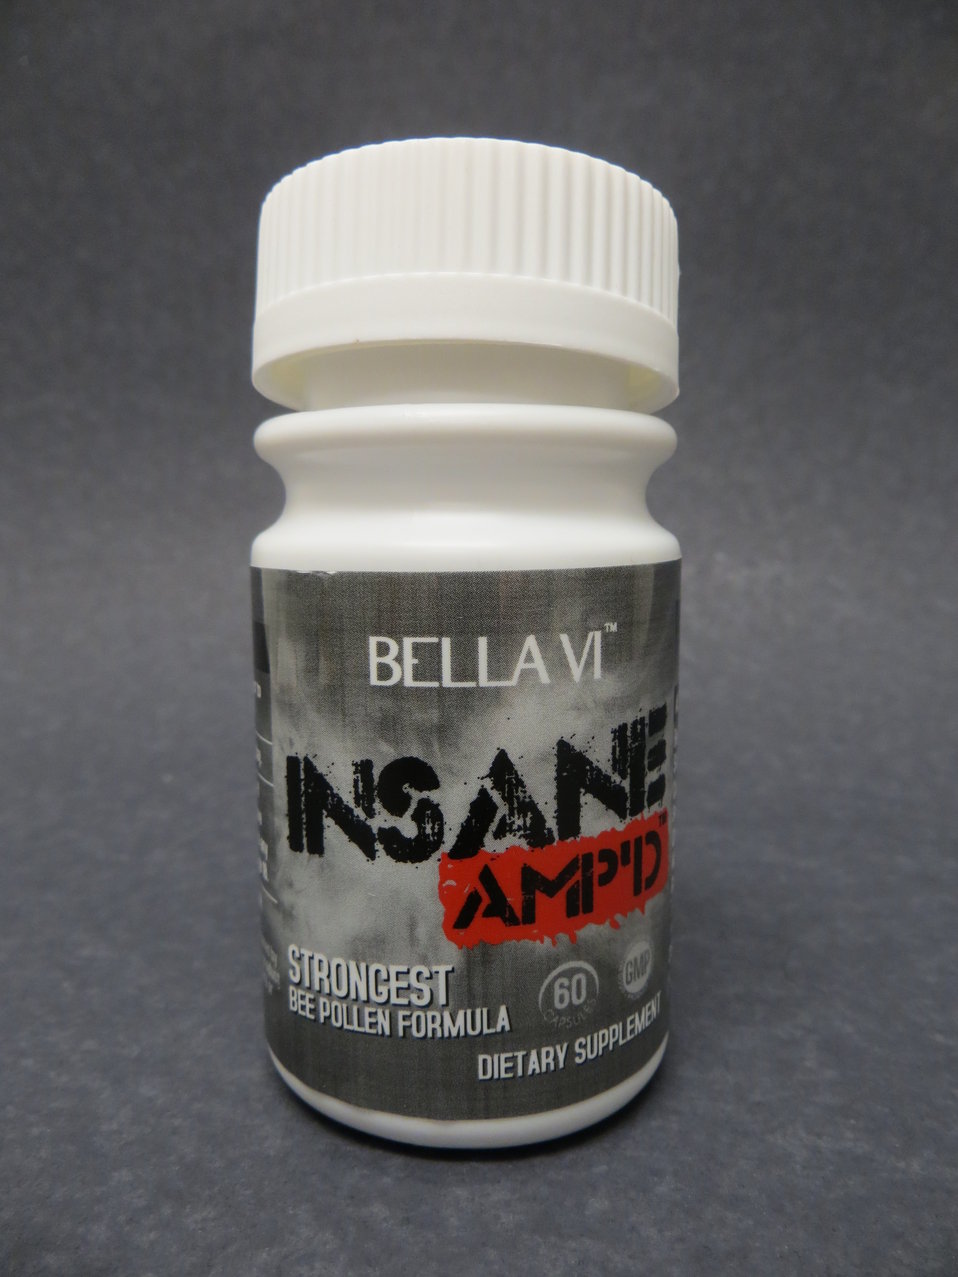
Insane Amp'd

October 10, 2013 - The FDA is advising consumers not to purchase or use 'Insane Amp'd,' a product promoted and sold for weight loss. The product was found to contain undeclared sibutramine and phenolphthalein. For more information, go to www.fda.gov/drugs/resourcesforyou/consumers/buyingusingme...

And read this Consumer Update: Beware of Fraudulent ‘Dietary Supplements’